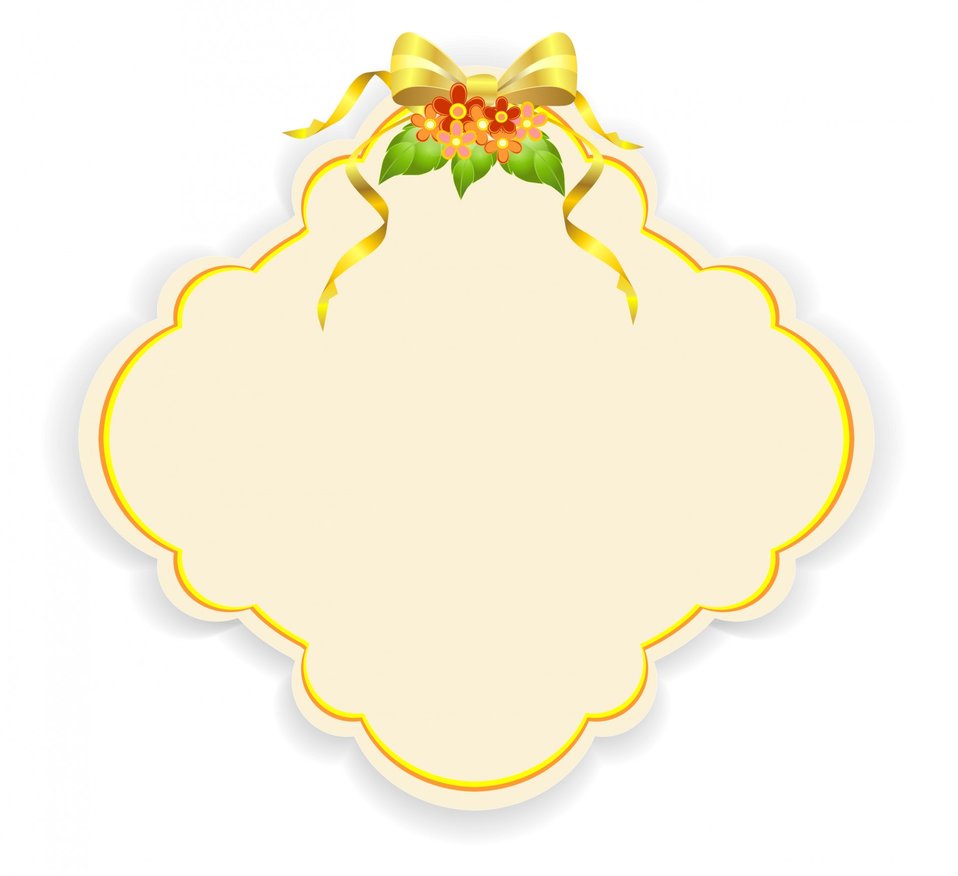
Abstract background for an inscription

Background with ribbons.